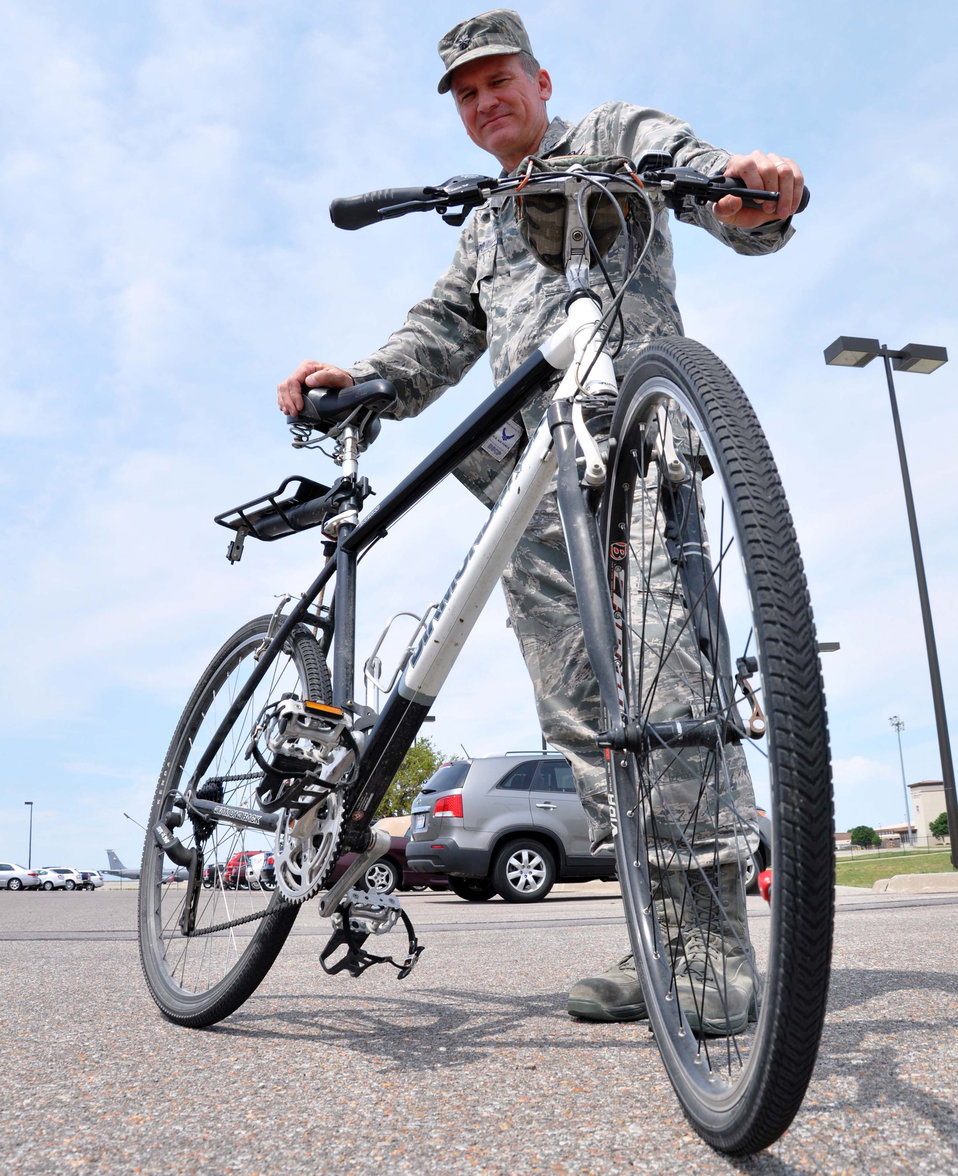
bike safety

Lt. Col. Clinton Burpo stands with his trusty bicycle at McConnell Air Force Base, Kan., June 12, 2012. Burpo has logged more than 21,700 miles on his bicycle since he began using it to commute to and from work in 2006. Burpo is a 931st Air Refueling Group logistics readiness officer,